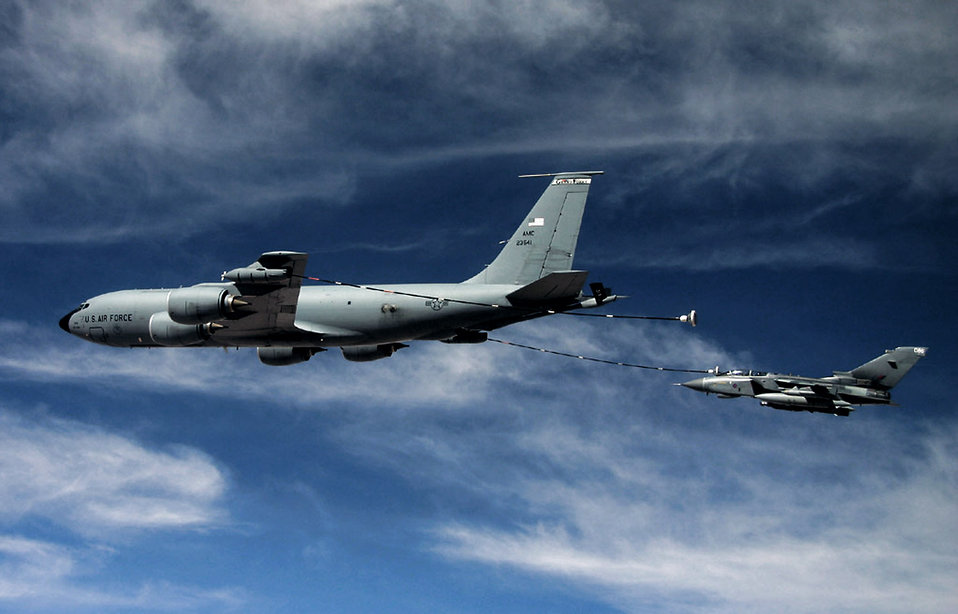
KC-135 provides fuel support

A KC-135R from the 340th Expeditionary Air Refueling Squadron refuels a Royal Air Force GR-4 Tornado over Iraq using the multi-point refueling systems. With MPRS, Air Force tankers have the versatility to refuel Air Force, Navy and coalition aircraft all in the same mission.